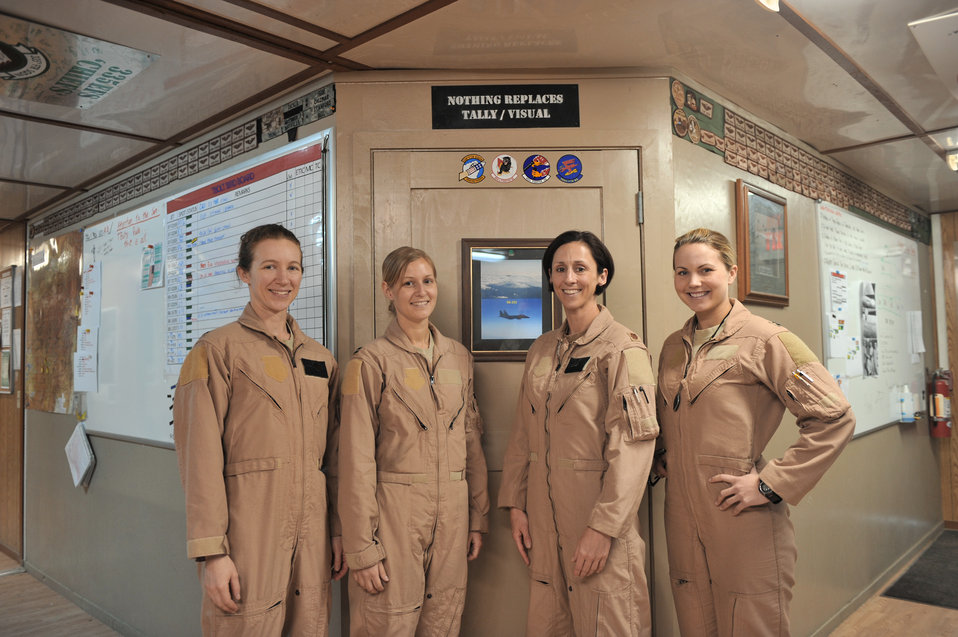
All-female F-15 crew

Maj. Tracy Schmidt, Capt. Kimberly Volk, Maj. Christine Mau and Capt. Jennifer Morton pose before their mission March 29, 2011, at Bagram Airfield, Afghanistan. Schmidt is a 389th Expeditionary Fighter Squadron F-15E Strike Eagle pilot, Volk is a 389th EFS weapons system officer, Mau is a 455th Air Expeditionary Wing executive officer and an F-15 pilot and Morton is a 389th EFS WSO.